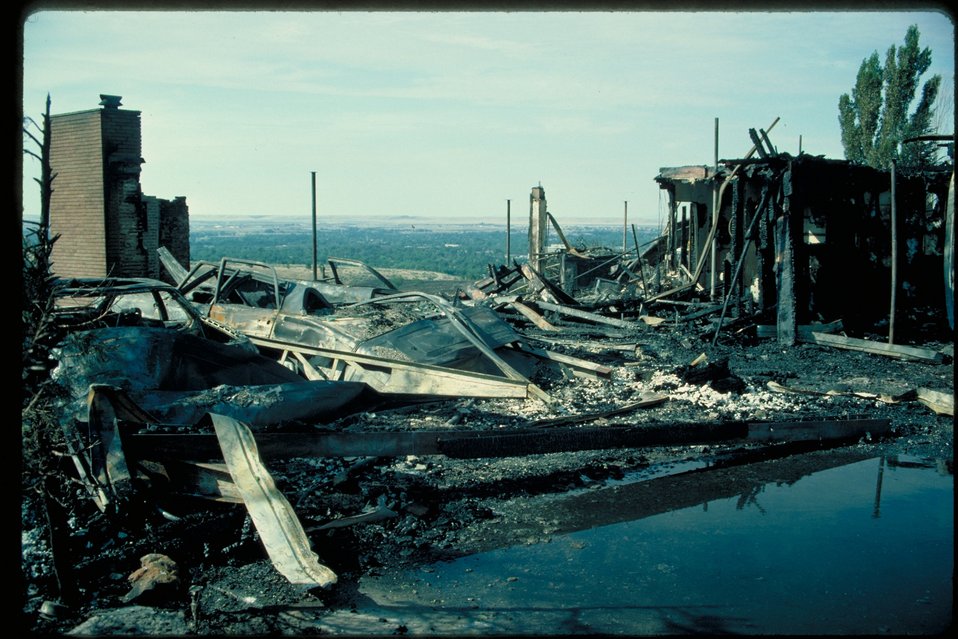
Burned house on Boise Front Four Rivers Field Office LSRD Lower Snake River District